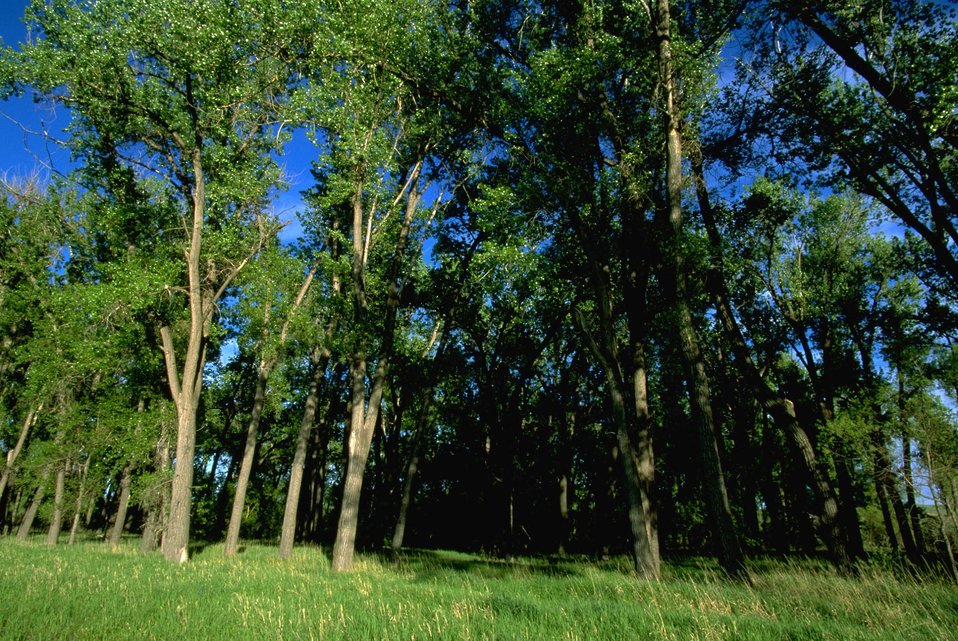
Cottonwood tree grove in the Sundance Lodge Recreation Area